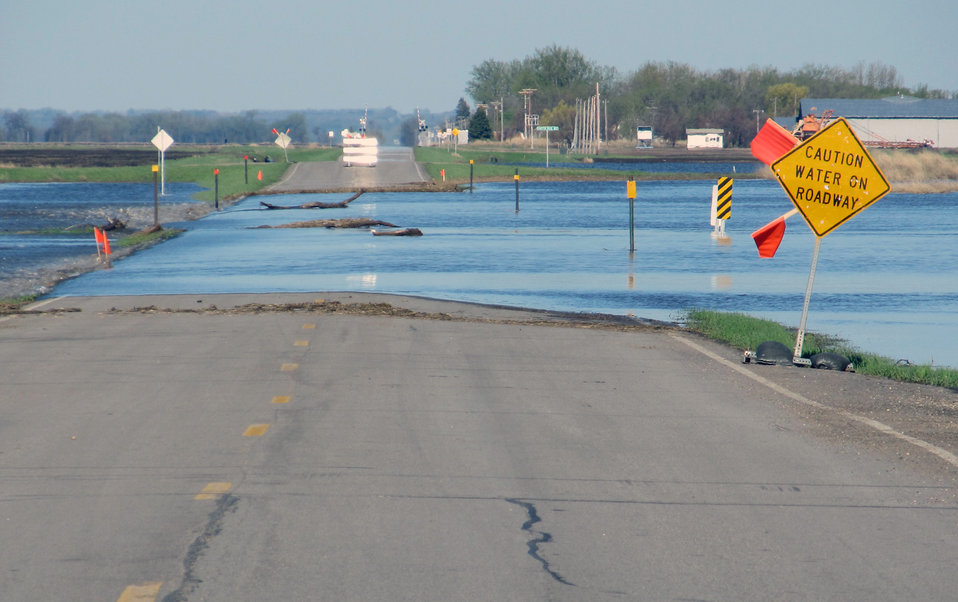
Flooding and water damage in the Park and Tongue River Watersheds located in Cavalier, Pembina and Cavalaier Counties in ND on Thursday, May 23, 2013.